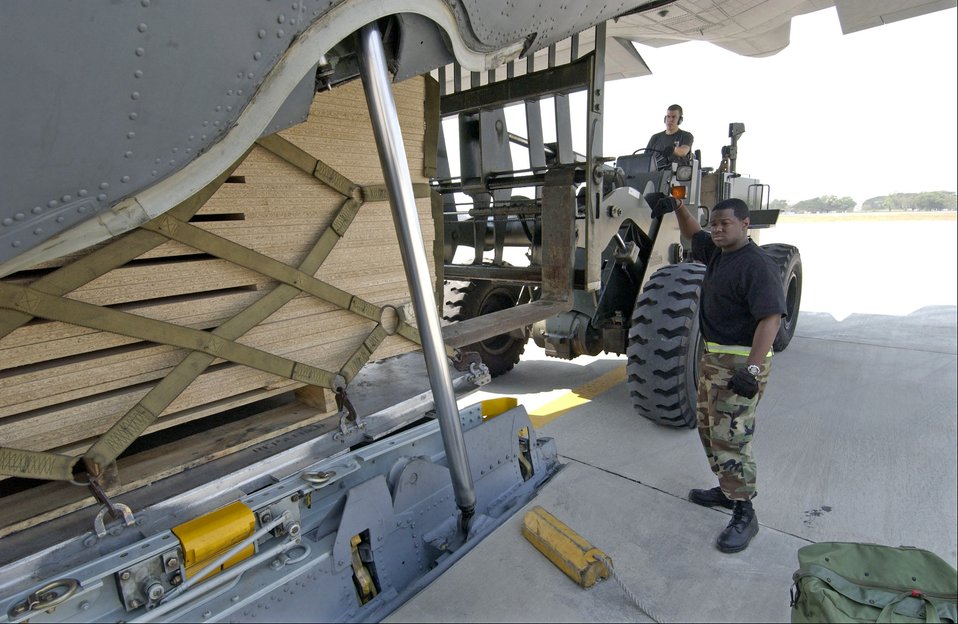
Tsunami Relief

BANGKOK INTERNATIONAL AIRPORT, Thailand -- Staff Sgt. Billy Lucas guides a pallet of relief supplies on a C-130 Hercules from Kadena Air Base, Japan here recently. Sergeant Lucas is an air transportation craftsman with the 733 Air Mobility Squadron at Kadena and is deployed to Thailand in support of the international tsunami relief efforts in Asia.